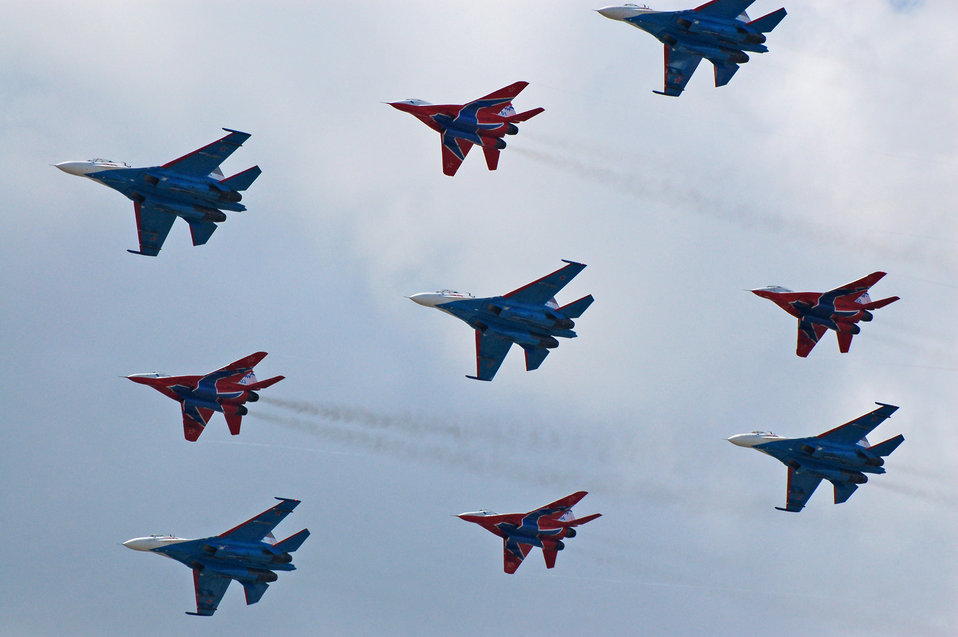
'The Big Nine' - flight groups 'Russian Knights' and 'Strizhi' (the international aerospace salon MAKS-2007) Русский: «Большая девятка» — пилотажные группы «Русские витязи» и «Стрижи» (международный авиакосмический салон МАКС-2007)